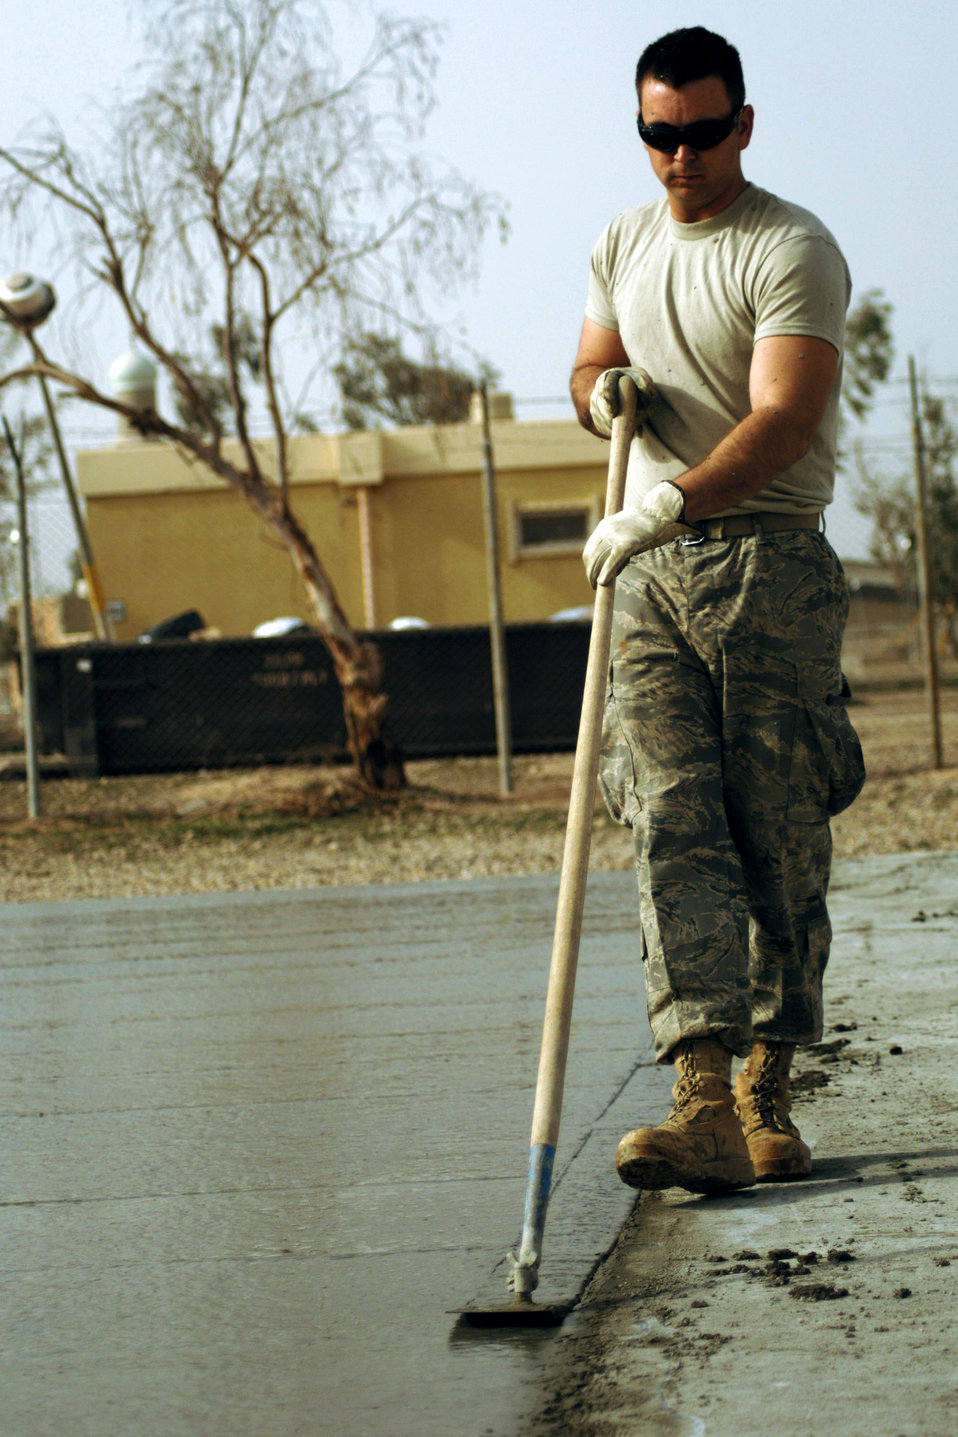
Set in stone

Airman 1st Class Daniel Bailey smoothes out the edge of a concrete pad Feb. 15 using a cement-finishing tool called a walking edger during a construction project at Joint Base Balad, Iraq. Airman Bailey, a pavement and construction equipment operator with the 332nd Expeditionary Civil Engineer Squadron, is deployed from Malmstrom Air Force Base, Mont.